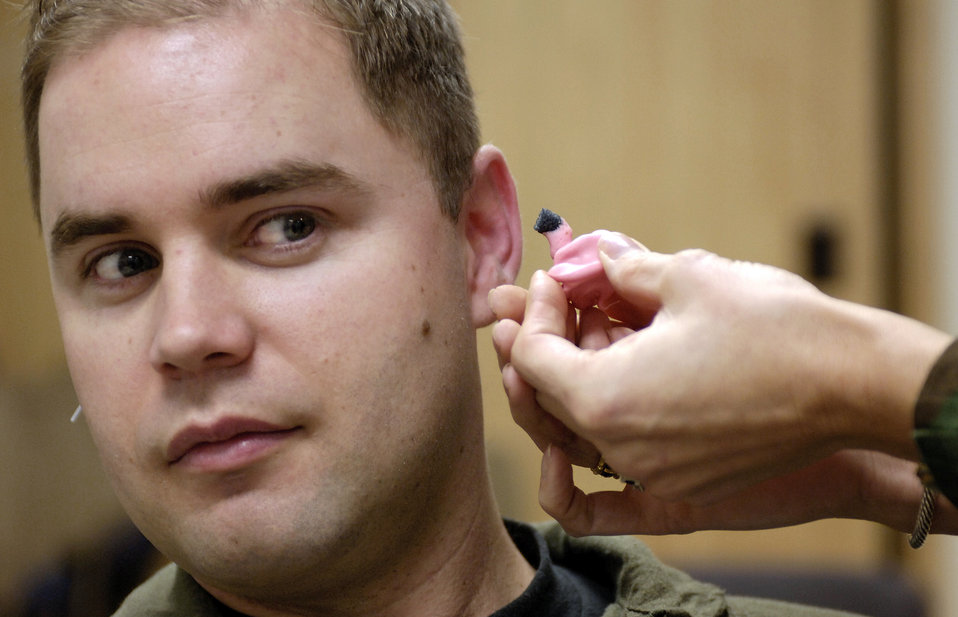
Can you hear me now?

BARKSDALE AIR FORCE BASE, La. (AFPN) -- Lt. Col. Mickra King removes a mold, the Air Force's new attenuating custom communications earpiece system, from the ear of 1st Lt. Drew Baird. Each earpiece is custom-fit to the person's ear canal and contains a built-in speaker that connects to an aircraft's communication system. The earpieces are designed to help enhance radio fidelity, reduce ambient noise, increase situational awareness and protect against potential hearing loss. Lieutenant Baird is assigned to the 93rd Bomb Squadron. Colonel King is a clinical audiologist from the Air Force Research Laboratory at Wright-Patterson Air Force Base, Ohio.